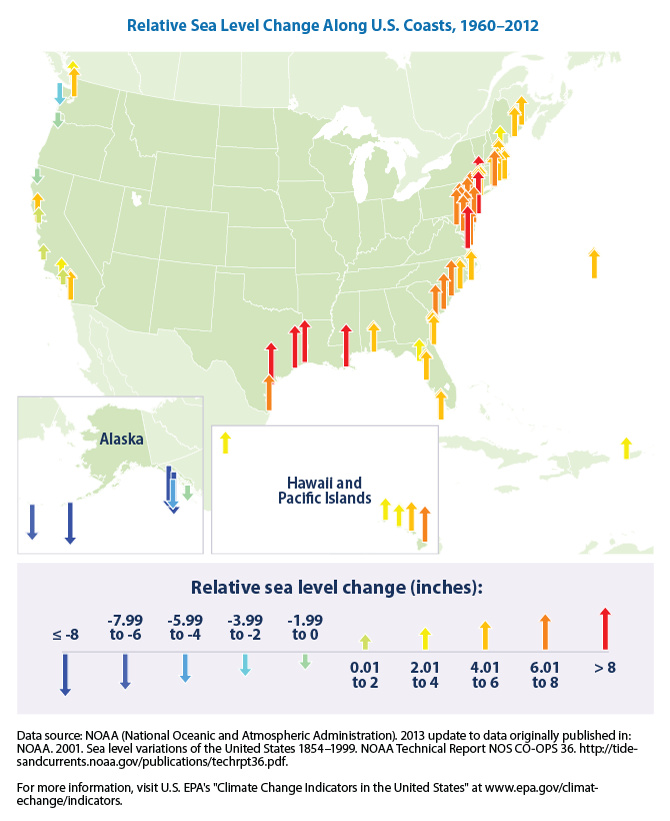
Climate Indicators - Relative Sea Level Change Along U.S. Coasts

Live on the coast? Some stations have seen an increase in sea level of more than 8 inches since 1960. What does it look like where you live?

Read our Climate Indicators Report to learn more: www.epa.gov/climatechange/science/indicators/index.html